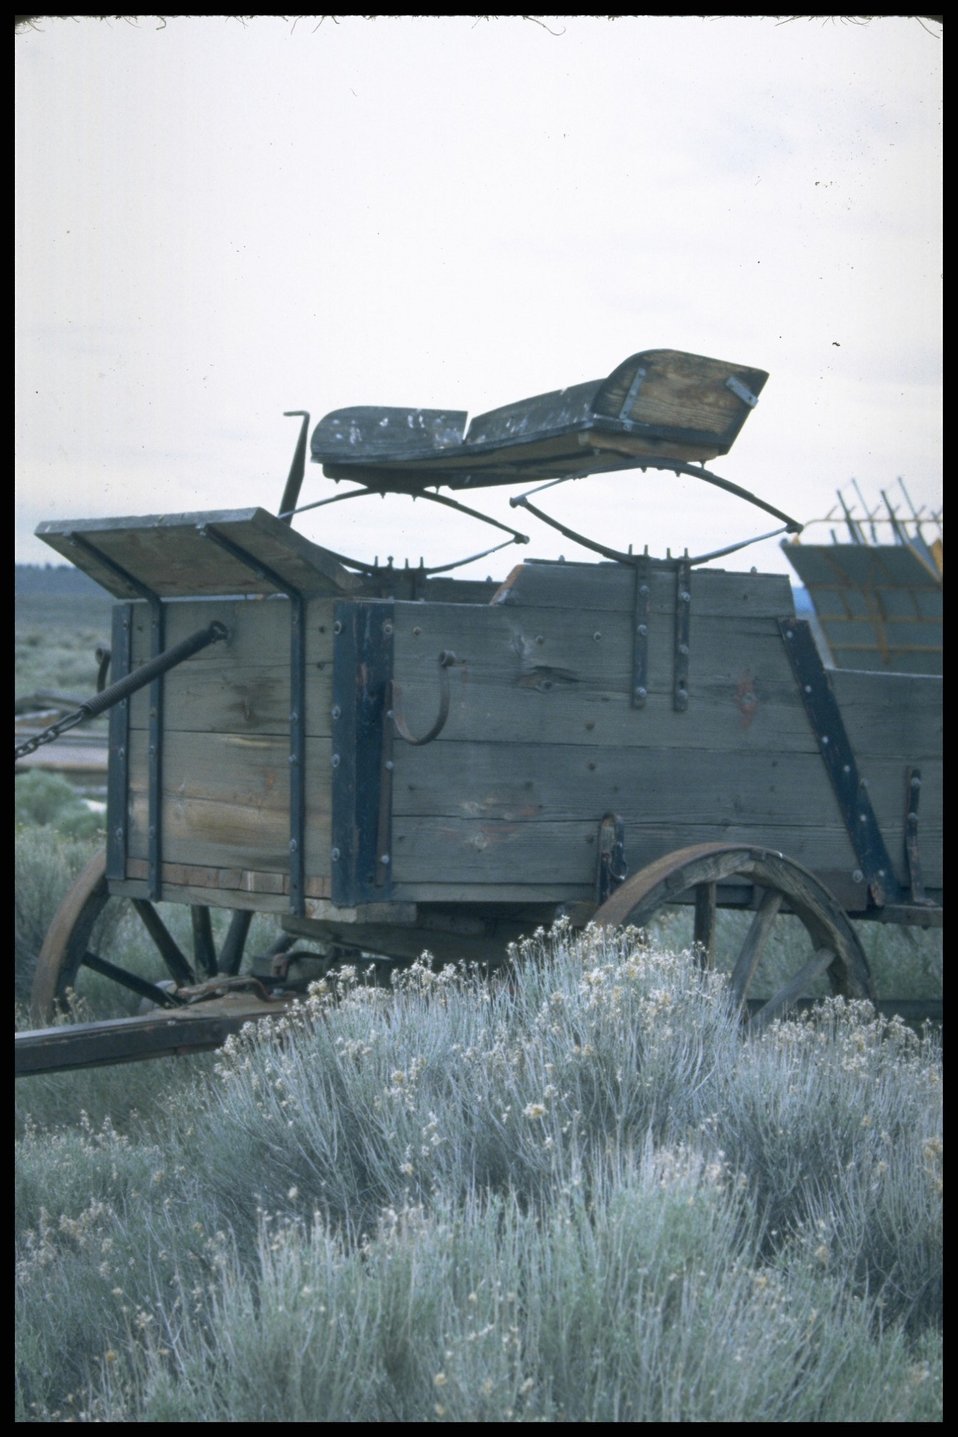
Abandoned chuck wagon on prairie, Lakeview District.